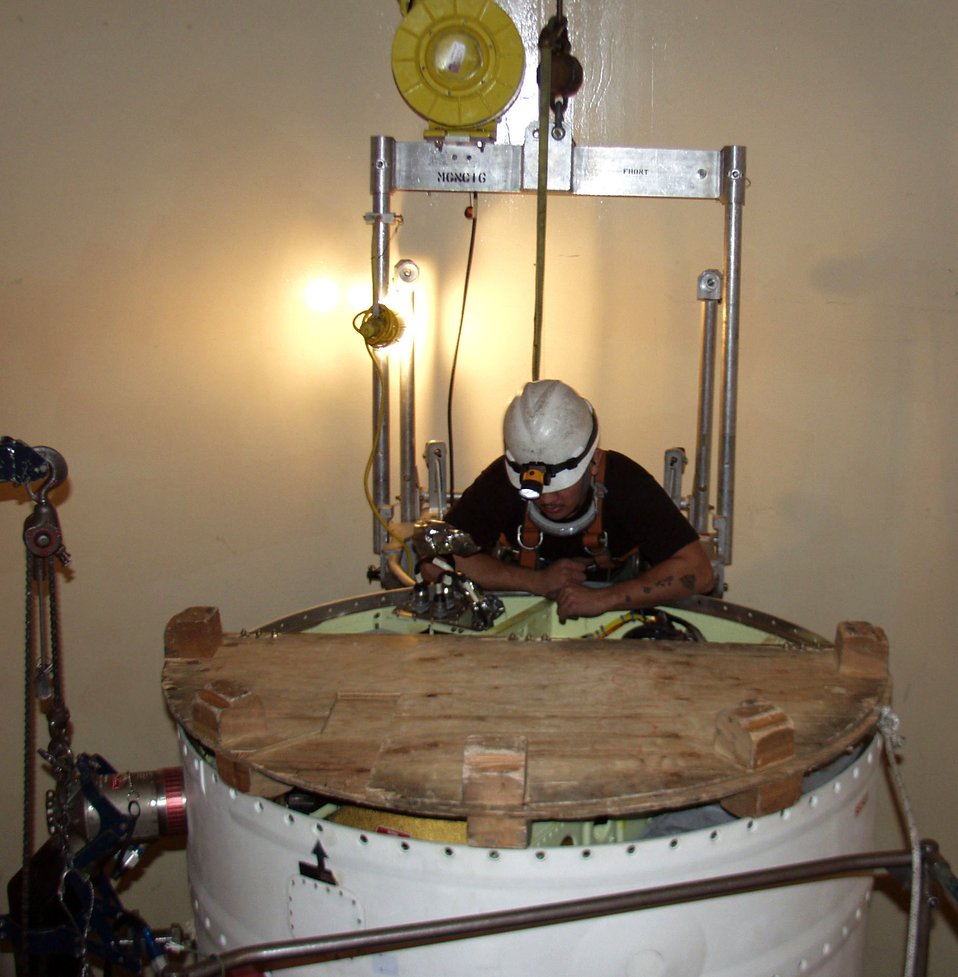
Malmstrom Airmen replace missile guidance systems

Staff Sgt. Preston Yockeman inspects the missile guidance replacement system Dec. 4 at Malmstrom Air Force Base, Mont. Base Airmen completed the transition from the NS-20 MGS to the NS-50 system Dec.4. Sergeant Yockeman is a 341st Missile Maintenance Squadron team cageman.